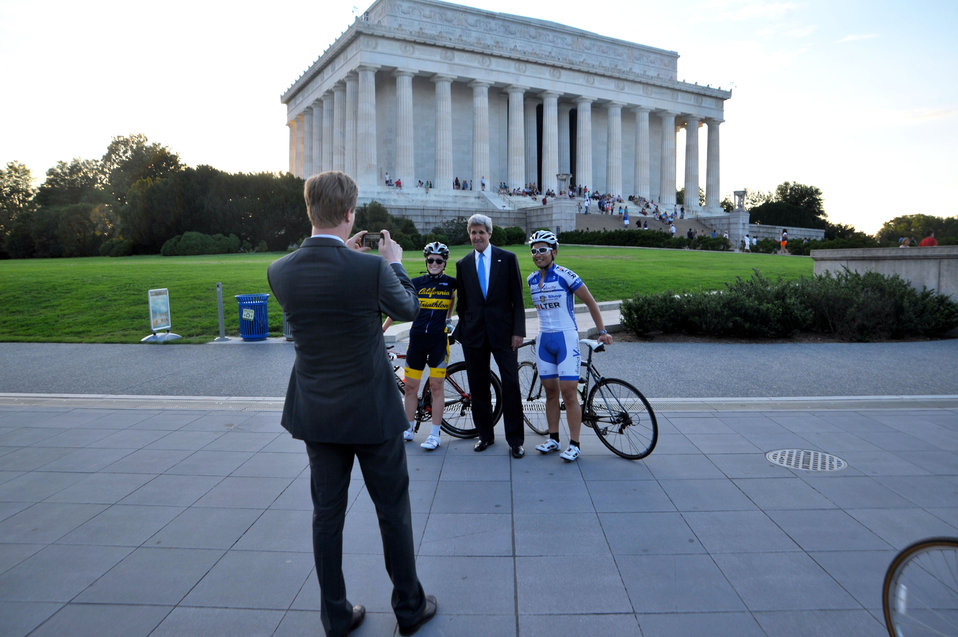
Secretary Kerry Poses for a Photo With Cyclists

Senior Aide Jason Meininger takes a photo of U.S. Secretary of State John Kerry and a pair of fellow cyclists during a twilight walk around the Lincoln Memorial in Washington, D.C., on July 24, 2013.